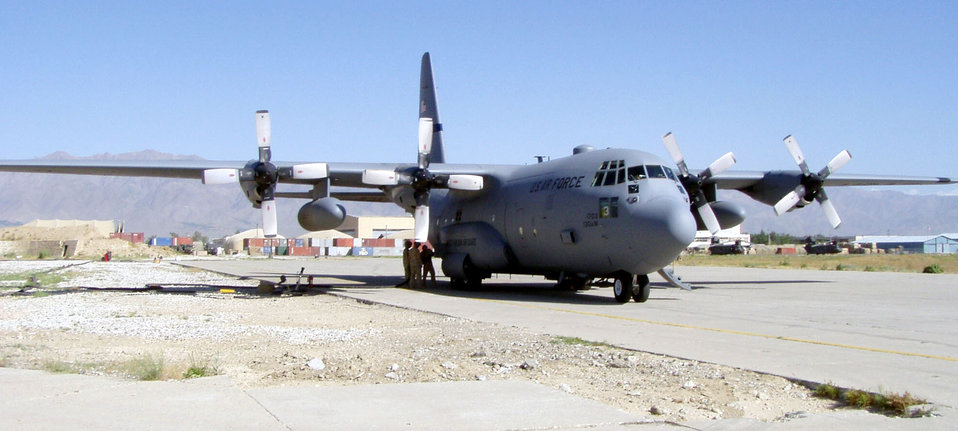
Pit stop

BAGRAM AIR BASE, Afghanistan (AFPN) -- A C-130 Hercules carrying passengers from the Regional Air Movement Control Center refuels here on its way to Kabul International Airport. Center representatives went to Kabul to discuss airspace safety with aviation officials and civilian aircraft operators.